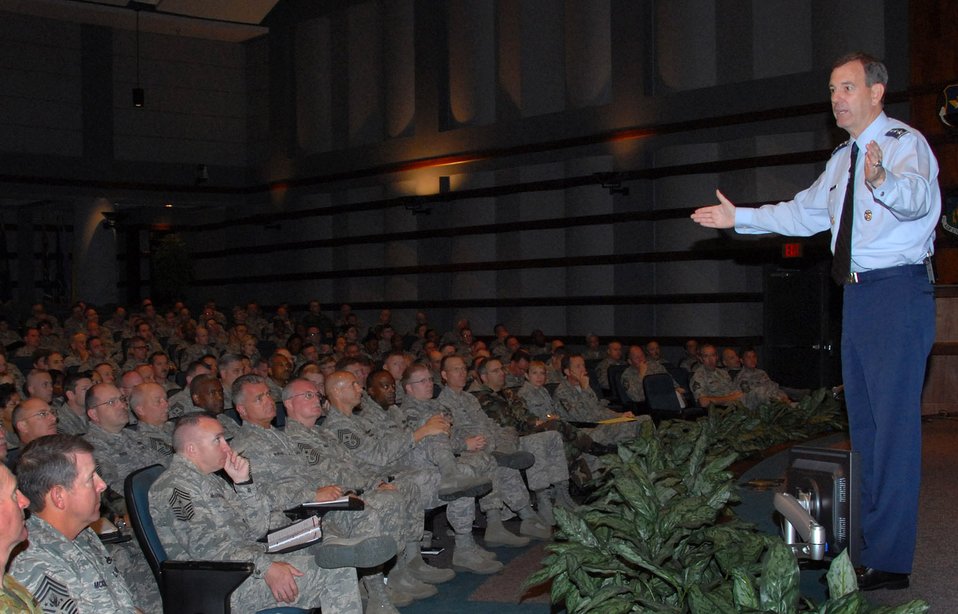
Top leaders unite for senior enlisted summit

Lt. Gen. Stephen R. Lorenz talks with more than 350 senior enlisted leaders during the second day of the Senior Enlisted Leader Summit May 19 at Maxwell Air Force Base's Gunter Annex in Alabama. General Lorenz stressed the importance of promoting enlisted education programs, such as Air University's associate to baccalaureate cooperative program, to enlisted Airmen. General Lorenz is the Air University commander.